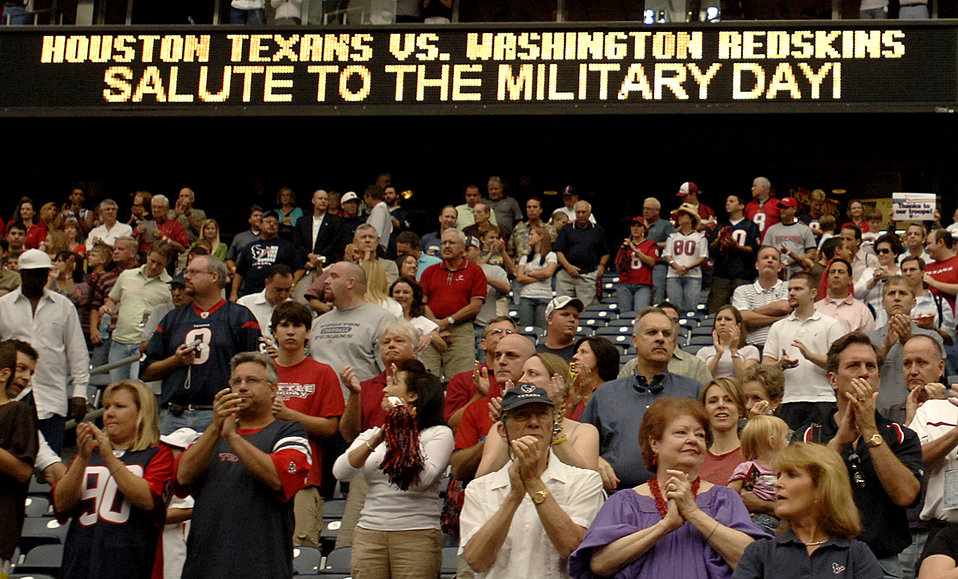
The Texans honored military servicemembers in their Salute to the Military day

Houston Texans fans take a moment to honor U.S. servicemembers everywhere during the Texans' Salute to the Military day at Reliant Stadium in Houston Sept. 24.